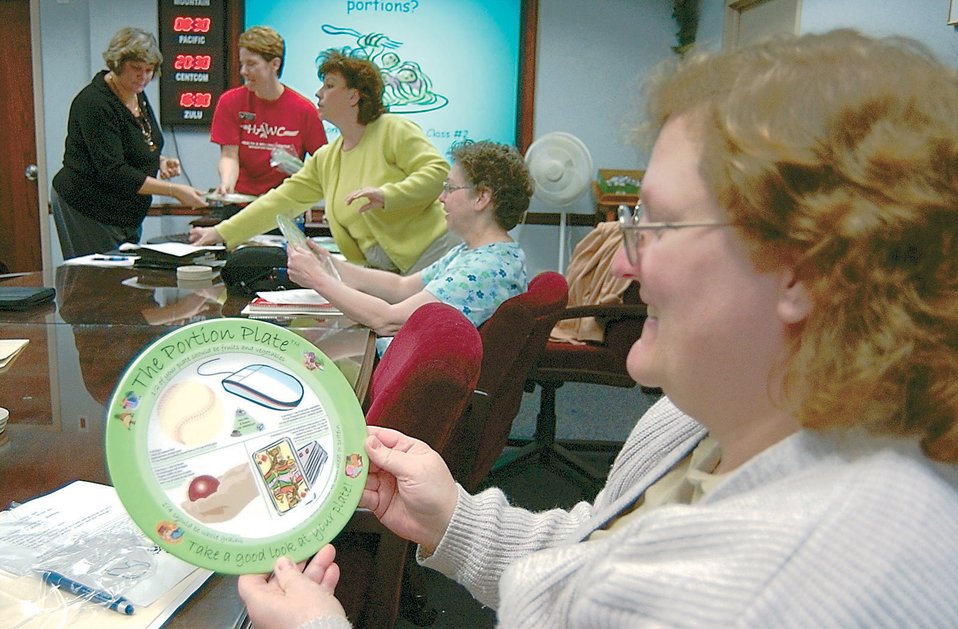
Portion plate

WRIGHT-PATTERSON AIR FORCE BASE, Ohio (AFPN) -- Terry Bohannon holds a